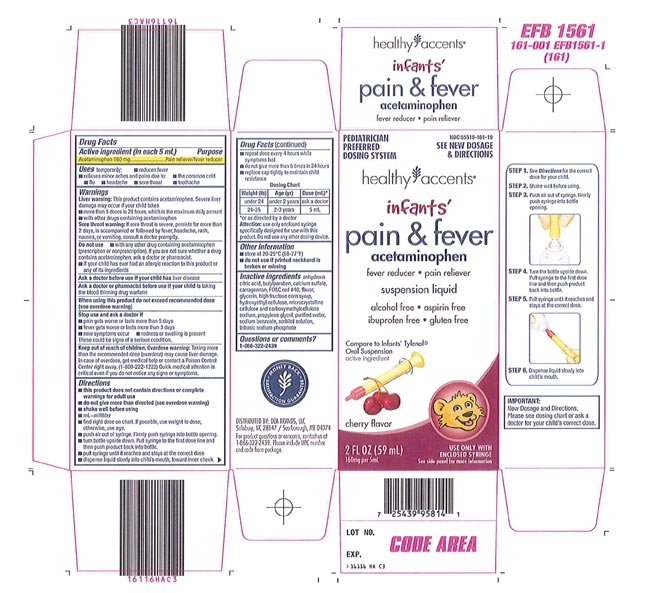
Recalled - Acetaminophen infant suspension liquid

November 1, 2013 – Product Recall – Perrigo Initiates Nationwide Voluntary Product Recall of Acetaminophen Infant Suspension Liquid, 160 Mg/5 Ml, Due to a Potential Defect with the Co-packaged Oral Syringe.